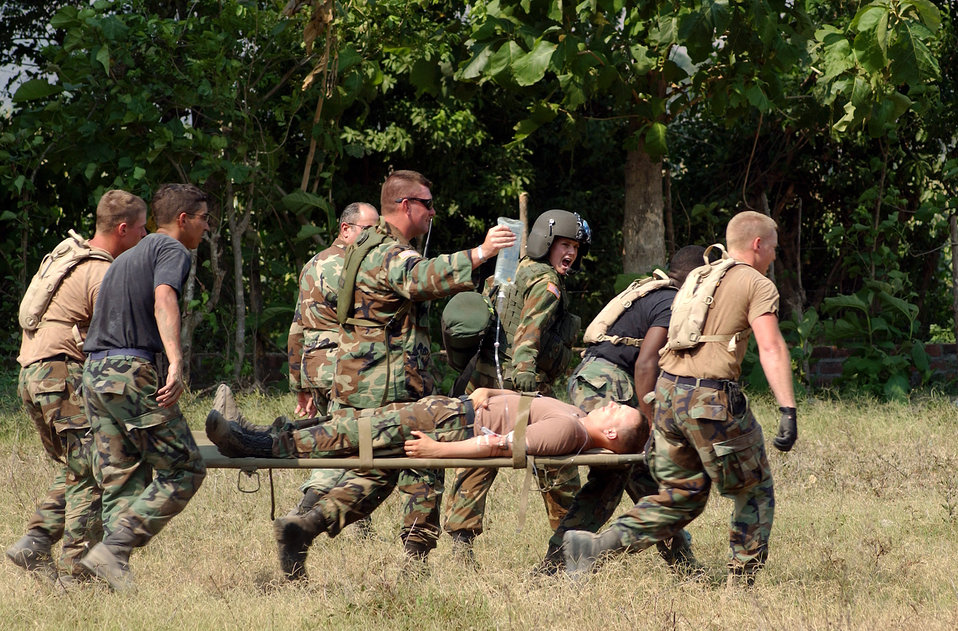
Practicing medicine in the field

LAS FLORES, El Salvador -- Army Sgt. Nichole Mueller shouts orders to a litter crew consisting of Army Spc. Brett Strout, Airman 1st Class James Petronella, Army Sgt. Edward Walsh, and Senior Airmen Neil Sutherland and Russ Ward to maintain proper approach alignment with a UH-60 Blackhawk used to evacuate Army Sgt. George Ruf during a medical evacuation exercise here April 19. The exercise tested the response capabilities of medics, a joint Army and Air Force construction crew and an aircrew from the 24th Medical Company supporting Joint Task Force Para Los Ninos. The exercise is a joint humanitarian readiness exercise providing schools and clinics around the San Vicente area hit hardest by multiple earthquakes in 2001. The Airmen are medics from Cannon Air Force Base, N.M.